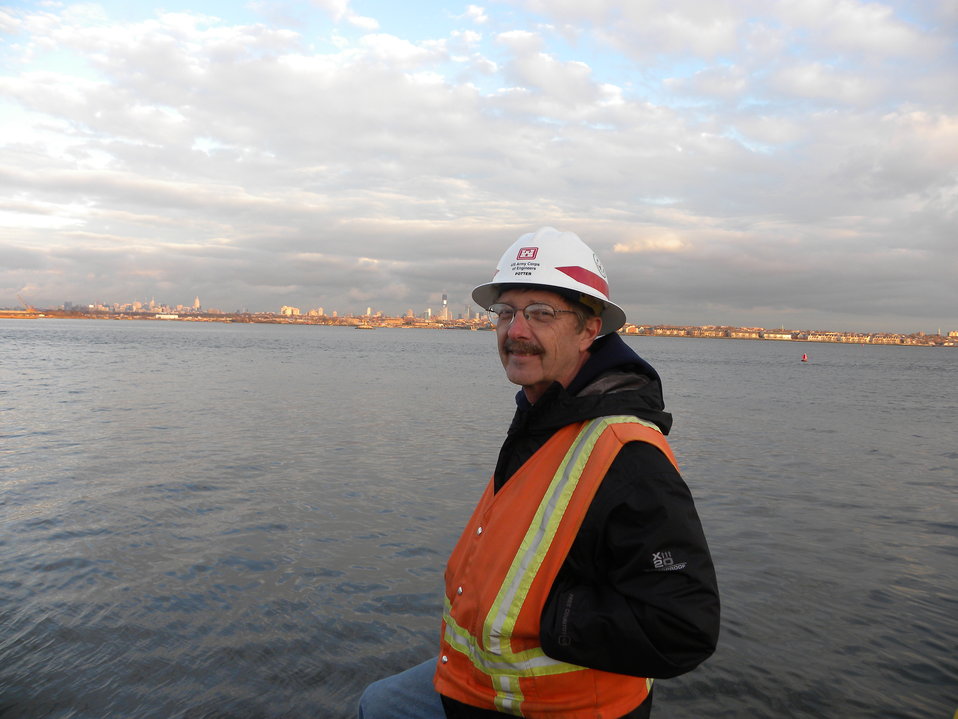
Dennis Potter in Newark

Dennis Potter, with the U.S. Army Corps of Engineers Sacramento District, shown at the Passaic Valley Sewerage Commission plant in Newark, N.J., in November 2012. Potter traveled to Newark, N.J., from Sacramento, Calif., to help un-water the plant and oversee the construction of a temporary replacement facility. One of the Corps’ missions under the federal government’s Hurricane Sandy response and recovery efforts is helping return critical public infrastructure damaged by the storm to service.